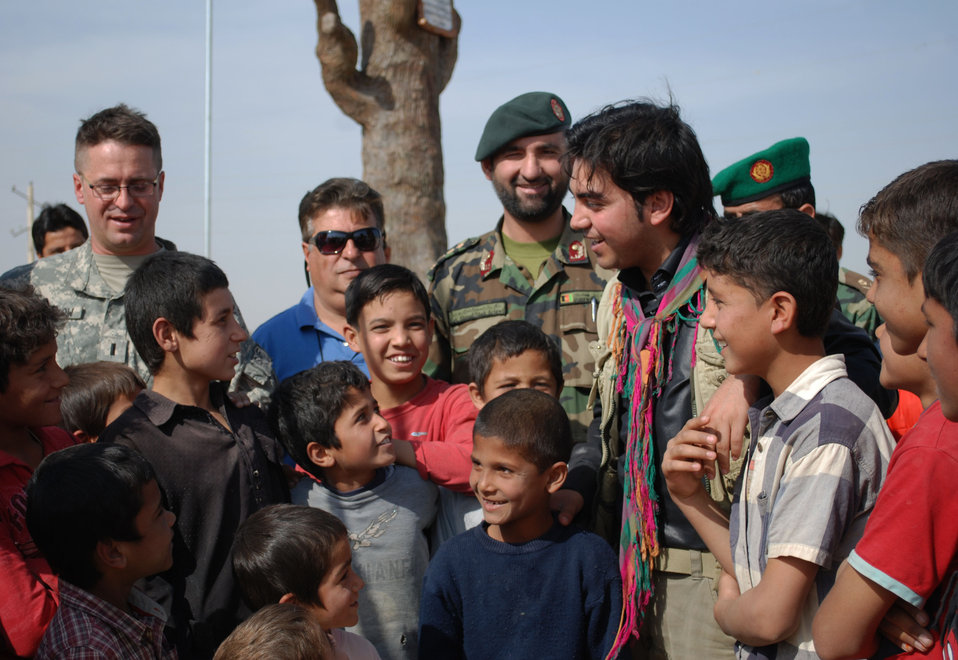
'On the Road' in Balkh Province